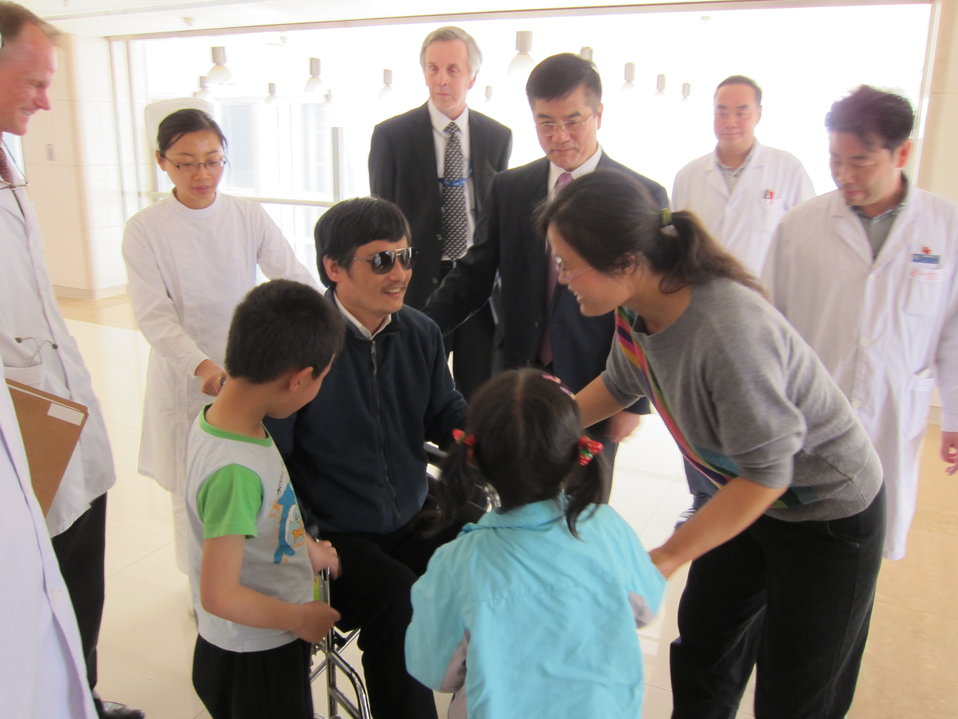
Chen Guangcheng With His Wife and Children

Chen Guangcheng with his family at a hospital in Beijing, China, on May 1, 2012. U.S. Ambassador to China Gary Locke, James Brown, and Regional Medical Officer Wayne Quillin are also pictured.